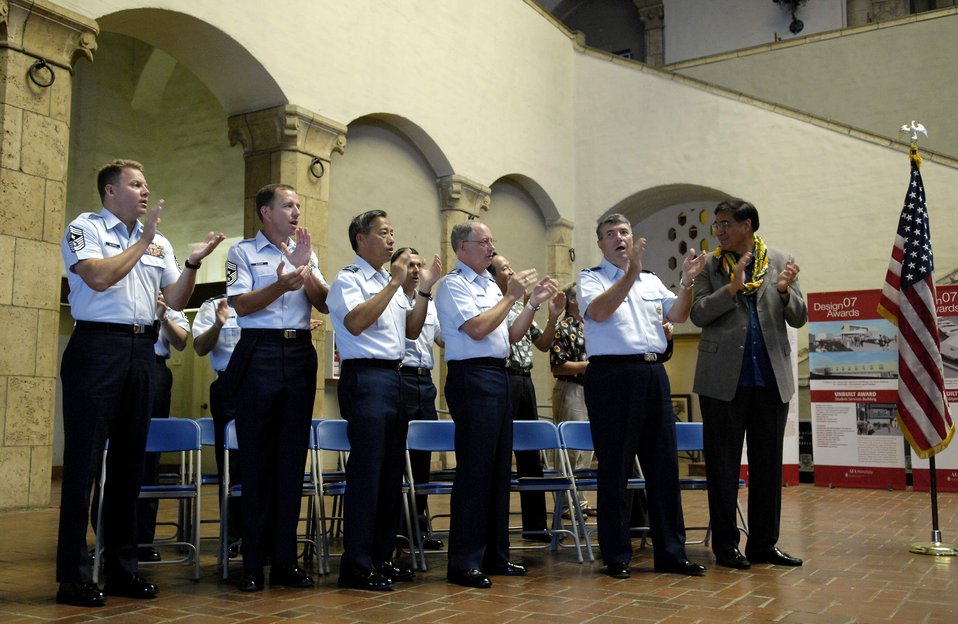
Air Force Week Honolulu kicks off

Air Force members and Mayor Mufi Hannemann sing the Air Force song after proclaiming Air Force Week Honolulu Sept. 9 at the Honolulu Hale in Hawaii. Mr. Hannemann, mayor for the city and county of Honolulu, Hawaii proclaimed Sept. 7 through 15 as Air Force Week in Honolulu.